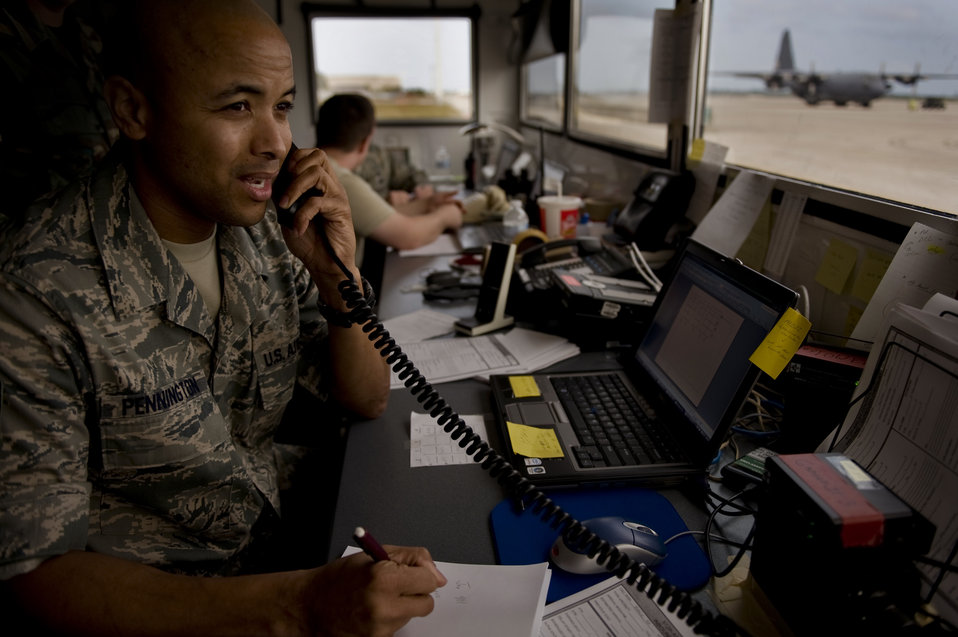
Unified Response

Tech. Sgt. Wayne Pennington helps control airflow traffic at Homestead Air Reserve Base, Fla. This influx of aircraft operate out of the base to assist with the Haiti earthquake relief efforts. Sergeant Pennington is from the 512th Airlift Control Flight.